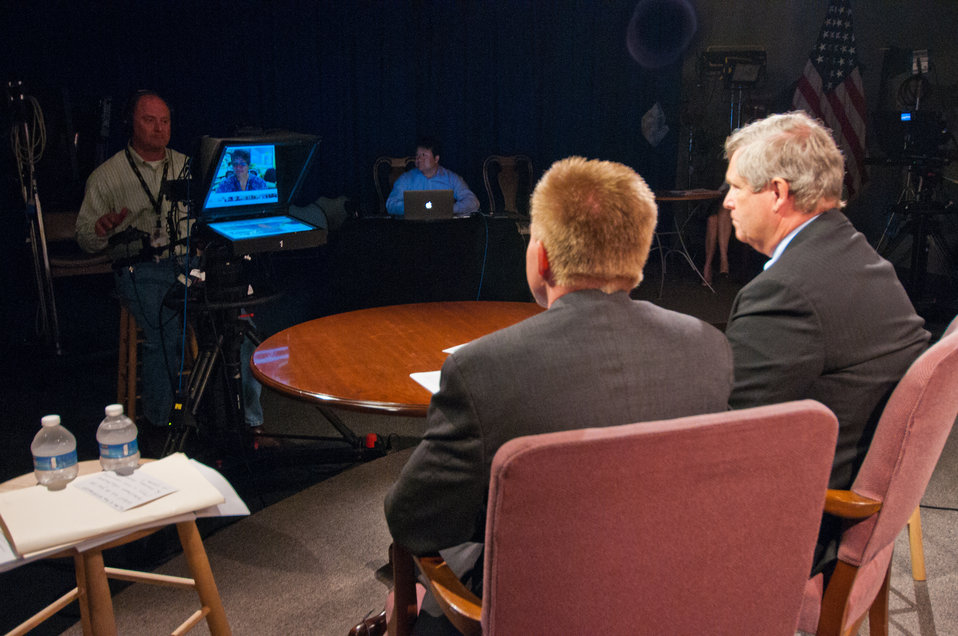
Agriculture Secretary Tom Vilsack and U.S. Department of Agriculture (USDA) StrikeForce Initiative Director Max Finberg participate in a Google Hangout to discuss StrikeForce opportunities, success stories and ways communities may get involved at USDA in Washington, D.C. on Monday, Jun. 17, 2013. The StrikeForce Initiative targets rural areas of persistent poverty where USDA staff can work with state, local and community officials to increase awareness of programs and services that help to promote economic development and job creation.